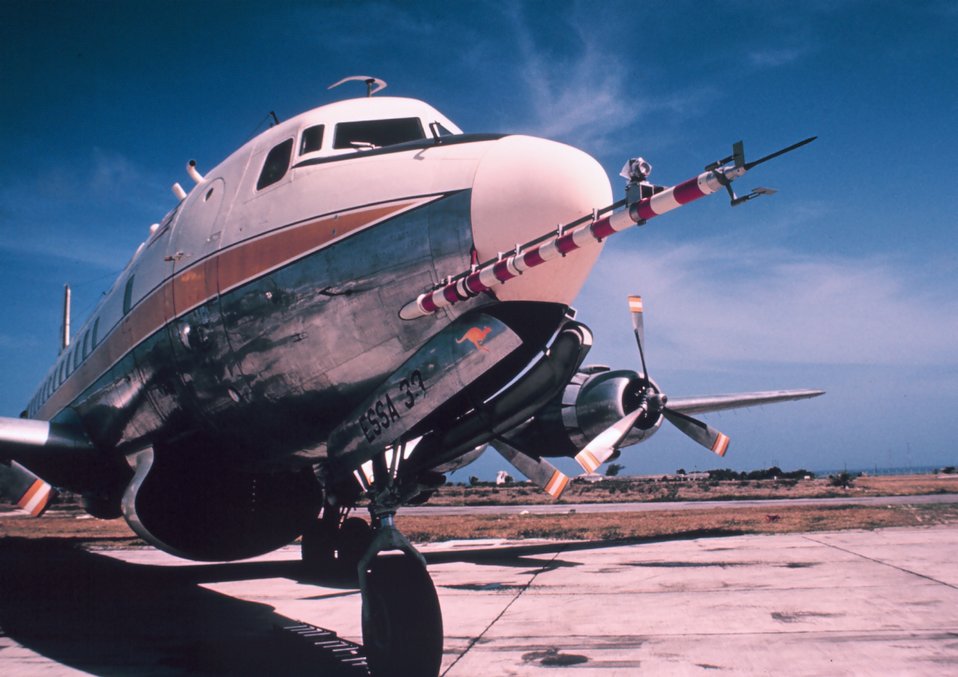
Weather Bureau DC-6 N6539C on tarmac with ESSA designator. Gust probe in foreground